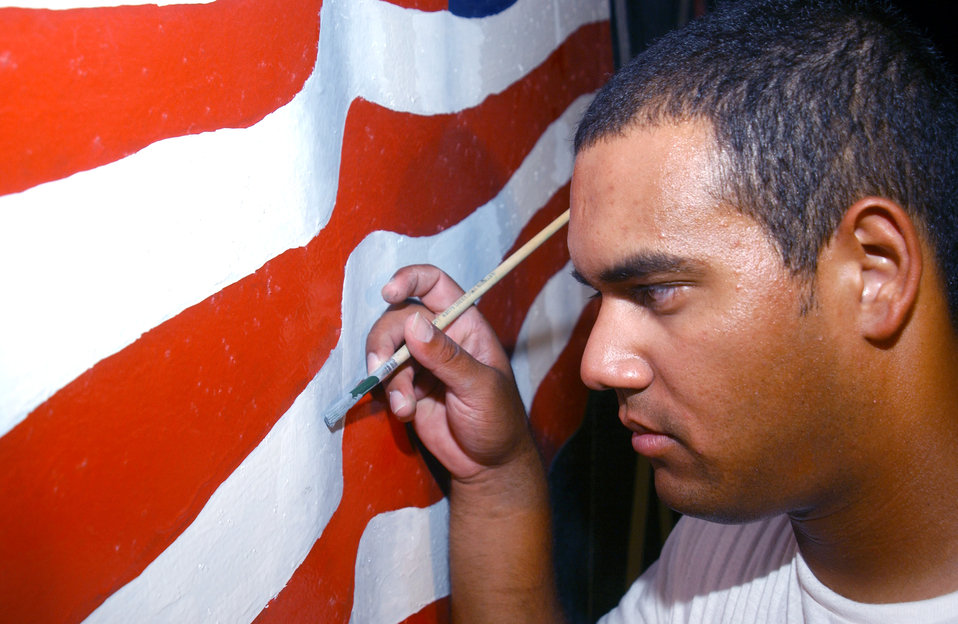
Painting the stage

Senior Airman Osvaldo Ros-Henriquez paints details on an American flag Sept. 7, part of a design for a stage recently constructed for the 380th Expeditionary Wing at a forward-operating base in Southwest Asia. Airman Ros-Henriquez was part of a group of people who won a design contest after the stage was built. The work, which includes the U.S. Central Command Air Forces and wing crest, took about three weeks to complete. Airman Ros-Henriquez is assigned to the 380th Expeditionary Civil Engineer Squadron.